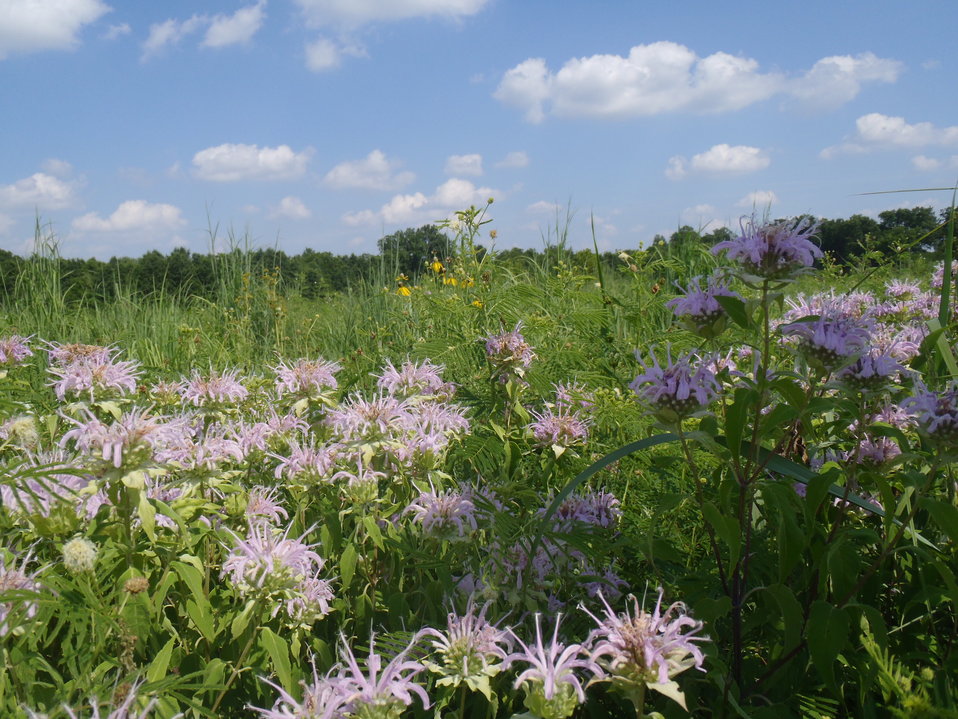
Tallgrass Prairie at Marais des Cygnes National Wildlife Refuge

Brilliant colors can be seen in the tallgrass prairie at different times of the year. This array of colors indicates the summer season.